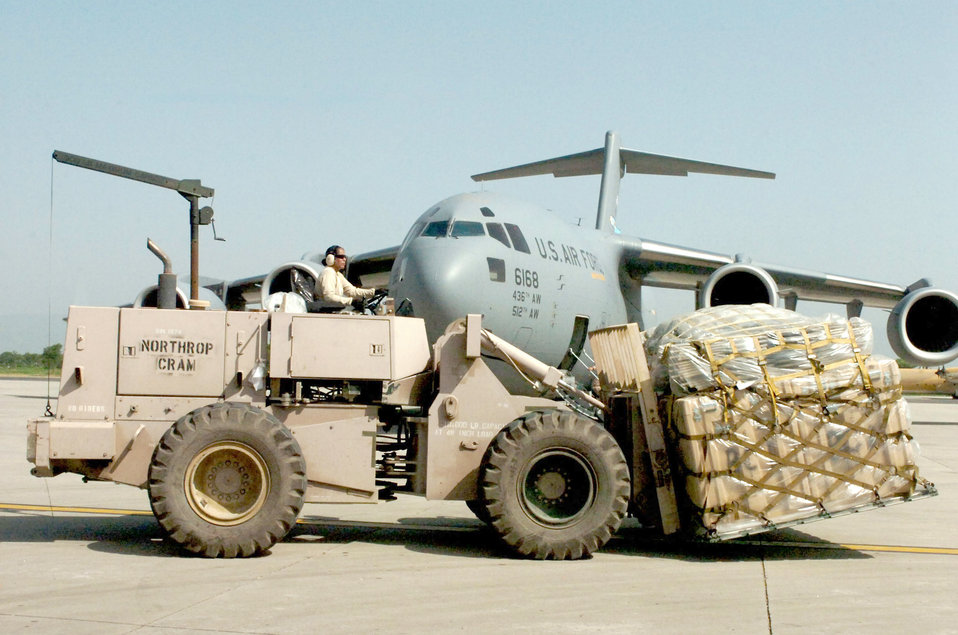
Pakistan flood relief

Airmen transport 621st Contingency Response Element equipment and supplies past a C-17 Globemaster III cargo aircraft Aug. 28, 2010, at Pakistan Air Force Base Chaklala, Pakistan. Approximately 40 Airmen from the 621st Contingency Response Wing arrived in Pakistan Aug. 28, 2010, to support Pakistan's flood relief operations.